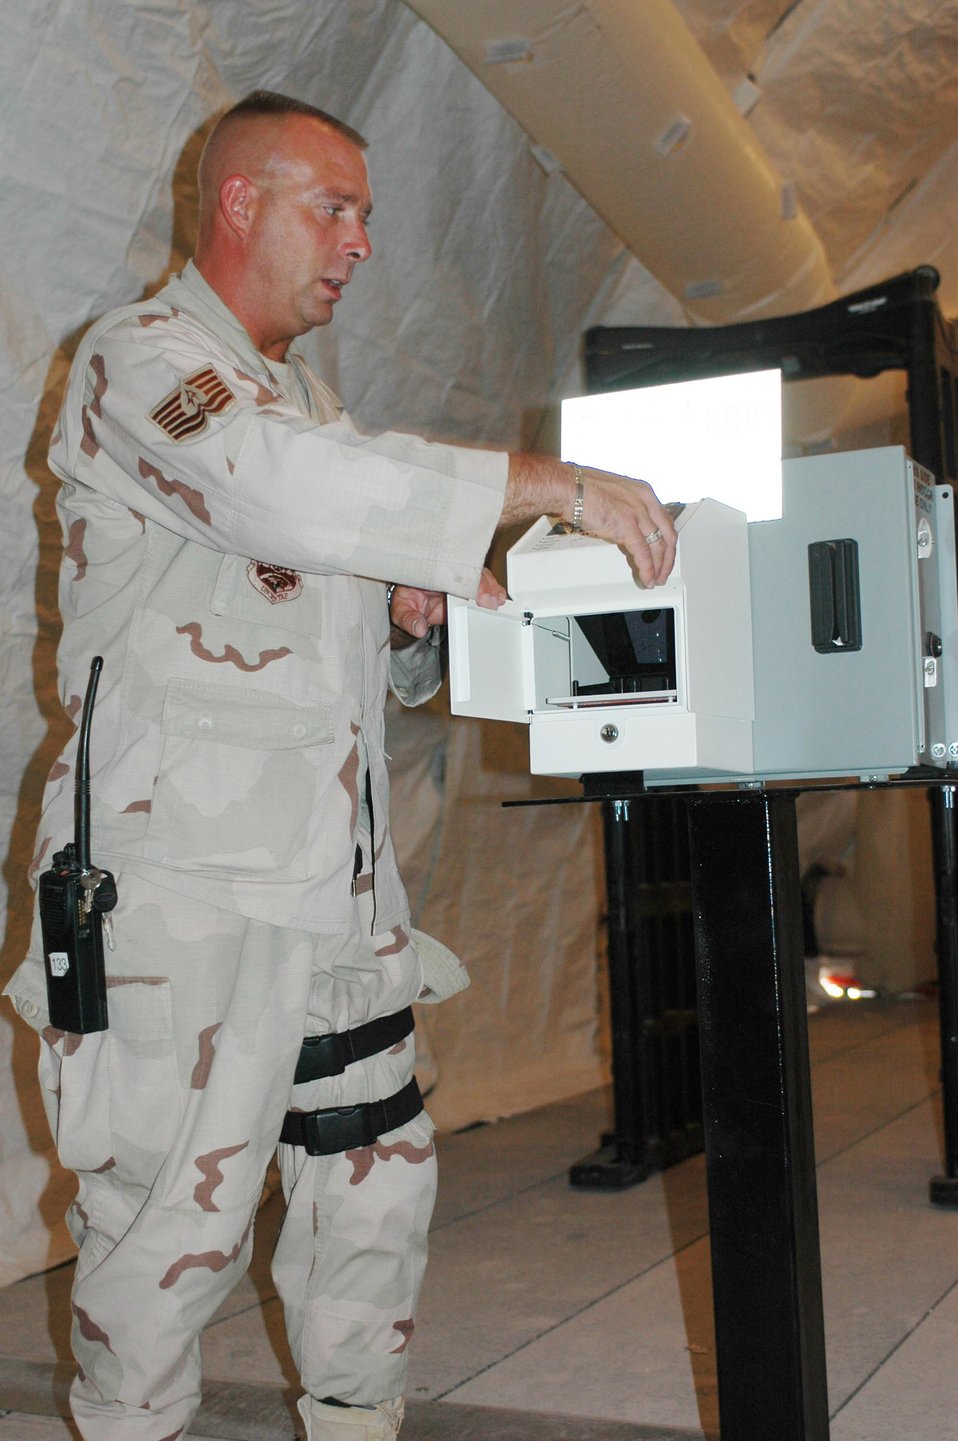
High-tech search area keep American, coaltion forces secure

Tech. Sgt. Steve Neith demonstrates how a handprint scanner will work once the new Defense Biometric Identification Database System is complete in Southwest Asia. It is expected to become operational here around June 15. Sergeant Neith is assigned to the 379th Expeditionary Security Forces Squadron.